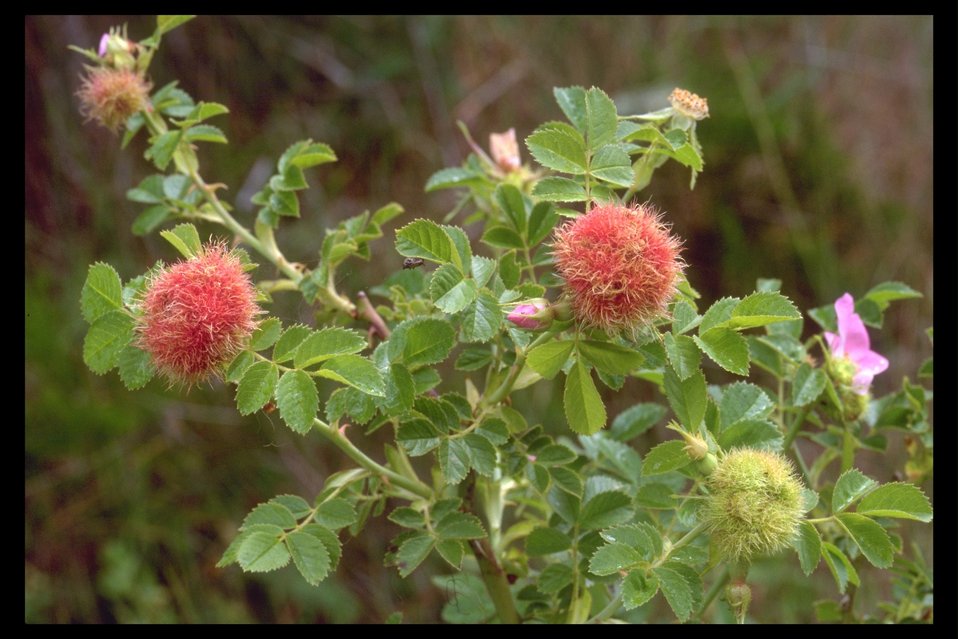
Rose Gall, from "Mossy Rose Gall," found at Upper Trail Creek.